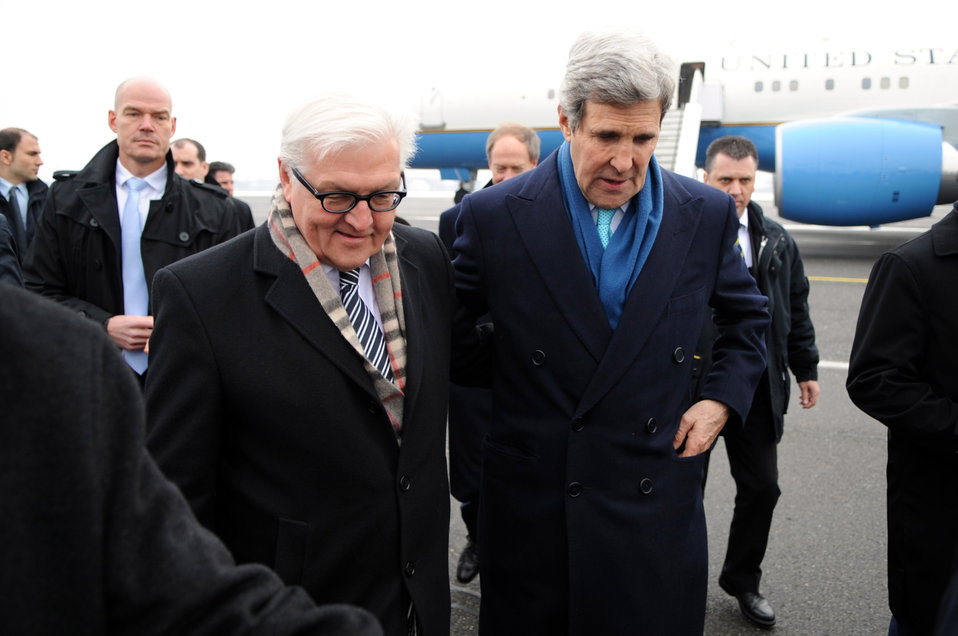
Secretary Kerry Walks With German Foreign Minister Steinmeier After Arriving in Berlin

German Foreign Minister Frank-Walter Steinmeier walks with U.S. Secretary of State John Kerry upon his arrival in Berlin for a bilateral discussion and meeting with Chancellor Angela Merkel on January 31, 2014.